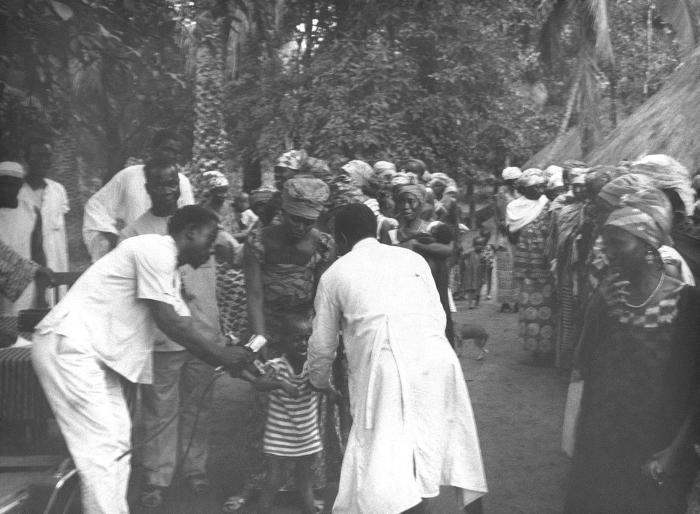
Brought by his mother, this Nigerian child is receiving a smallpox vaccination during the 1968 WHO Smallpox Eradication Project.